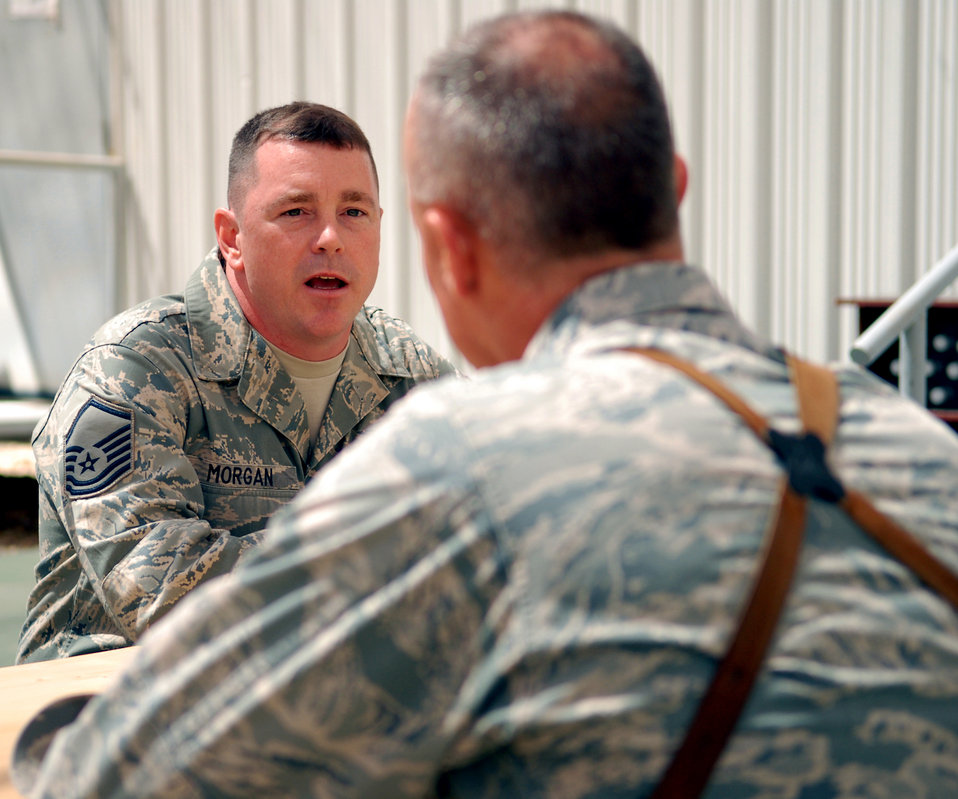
JET Airmen

Master Sgt. Patrick Morgan gives performance, quality of life and standard of living feedback to Brig. Gen. Craig A. Franklin May 14, 2010, at forward operating base Kalsu, Iraq. Sergeant Morgan is the NCO in charge of the 732nd Expeditionary Logistics Readiness Squadron redistribution property assistance team. He is one of more than 1,100 joint expeditionary tasked Airmen serving in 28 FOBs throughout Iraq. General Franklin is the 332nd Air Expeditionary Wing commander.